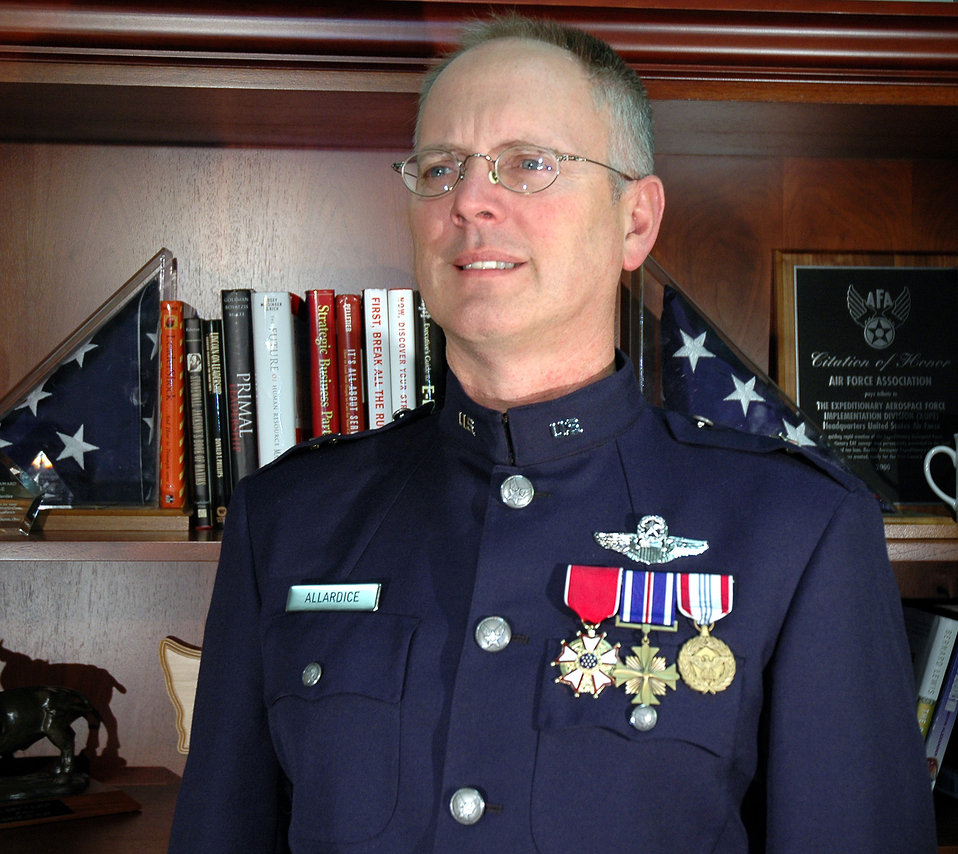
New service dress prototypes peak interest

Brig. Gen. Robert Allardice shows off a prototype of the Billy Mitchell heritage coat in the Pentagon on Monday, May 15, 2006. General Allardice is director of Airmen development and sustainment.